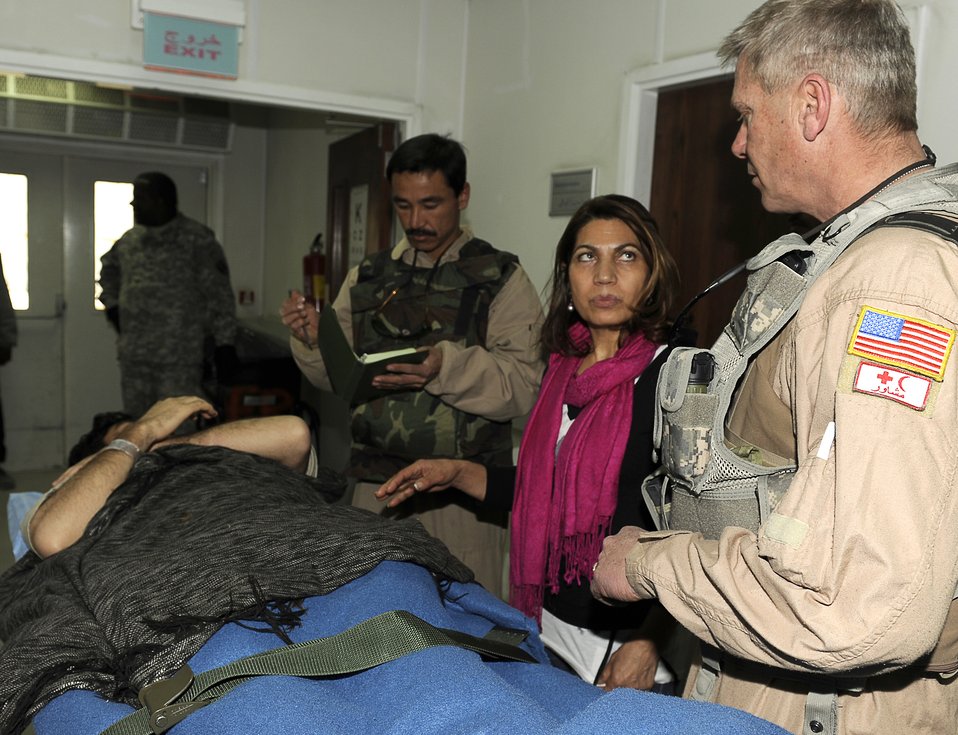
Airman and Afghan airman discuss medical evacuation with an Afghan soldier

Master Sgt. Richard Kramer and Afghanistan National Army Air Corp Sgt. 1st Class Ghulam Sakhi discuss with an Afghan soldier through Shakira Azzizi, an Afghan translator, what’s going to happen on a medical evacuation Feb. 3, 2010, from Bagram Airfield, Afghanistan. Sergeants Kramer and Sakhi are flight medics with the 438th Air Expeditionary Advisory Group/Combined Air Power Transition Force